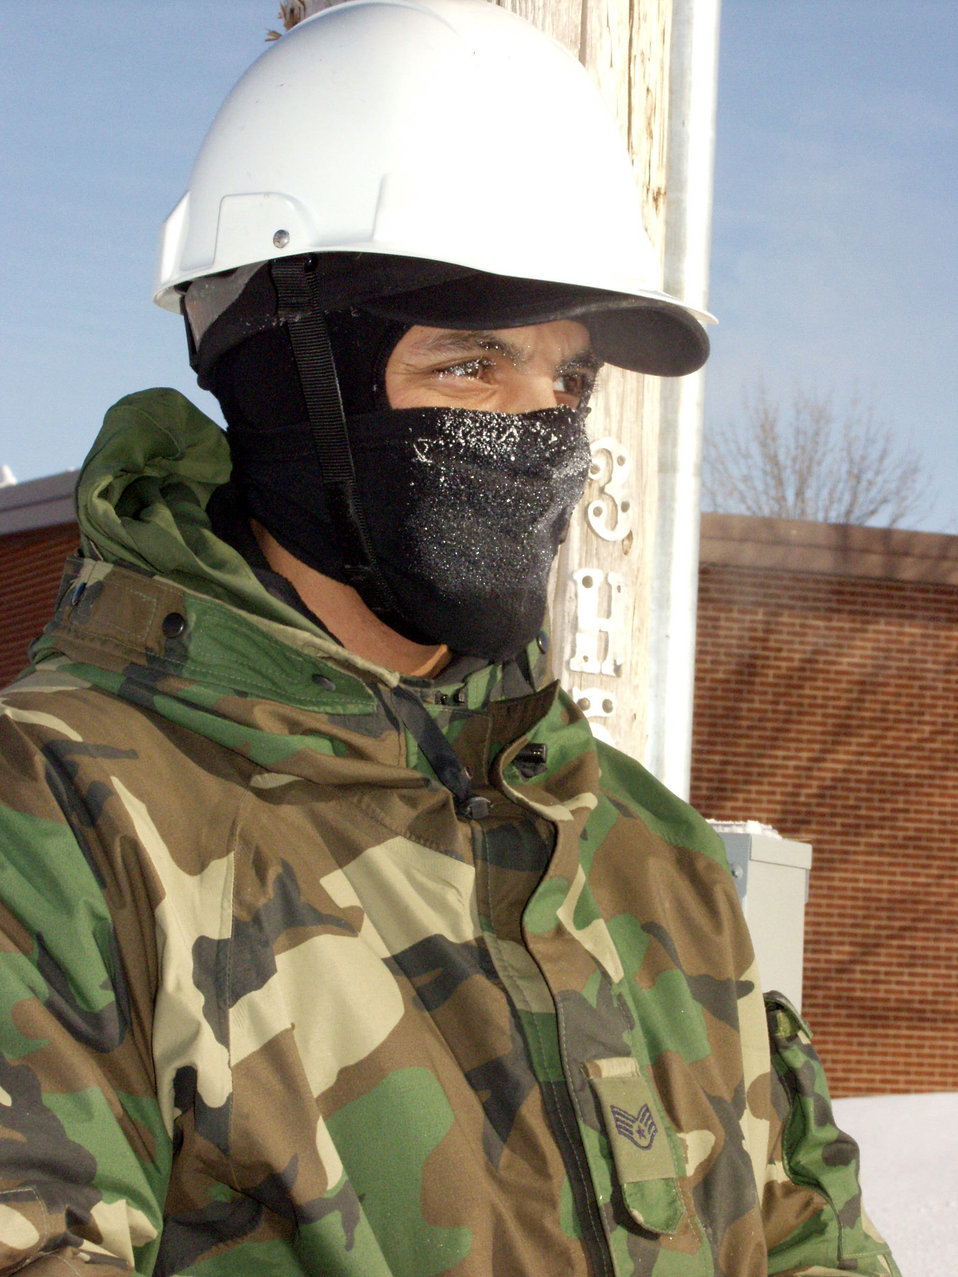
Shiver engineer

GRAND FORKS AIR FORCE BASE, N.D. -- Staff Sgt. Ramon Padilla and his co-workers have worked outdoors in temperatures that have reached minus 30 since mid-January here. Sergeant Padilla works in the 319th Civil Engineer Squadron exterior electrical shop.